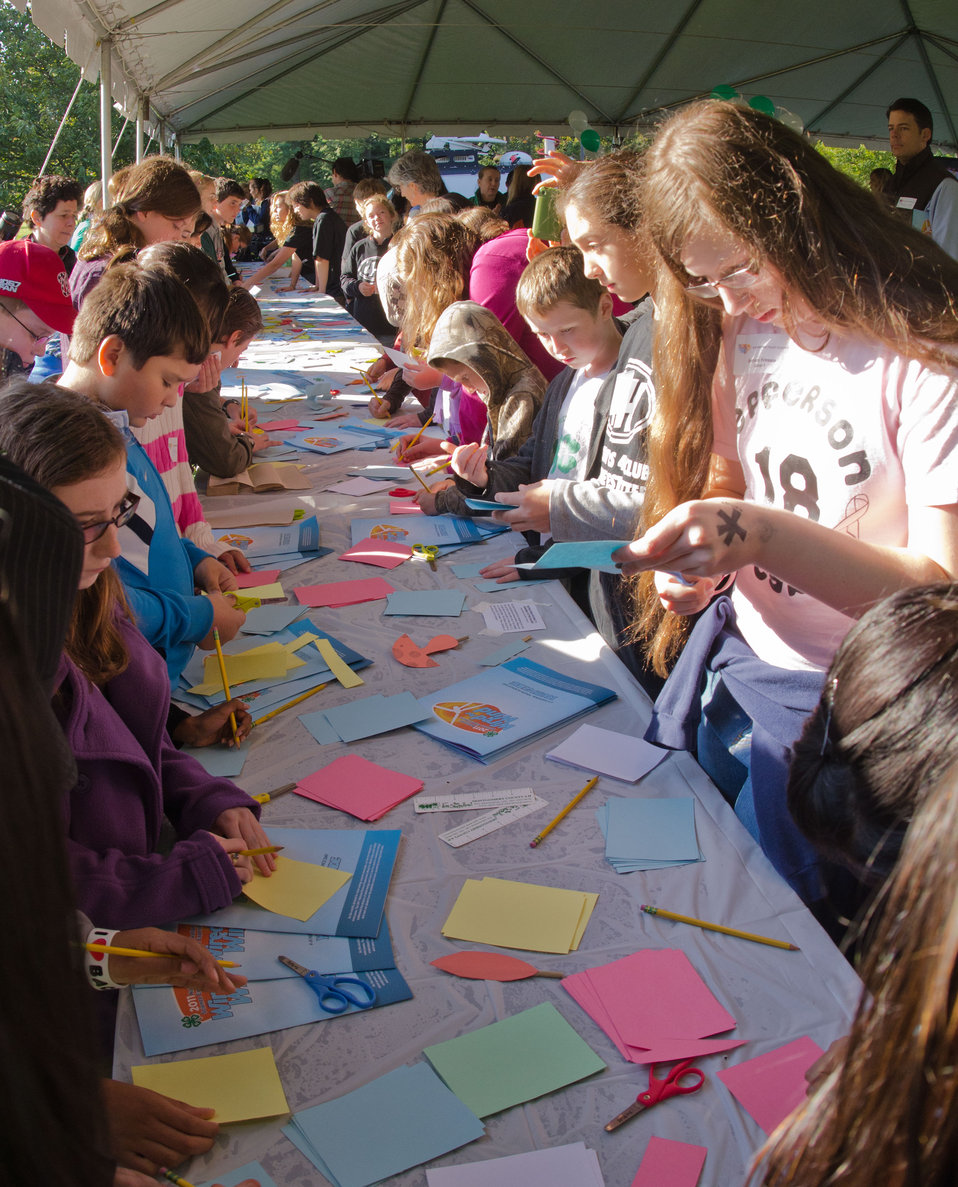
Some of the 150 children from Virginia and Maryland, participated in the 4-H Youth Science Day “Wired for Wind”. The 4H youth design and cut out paper wind generator blades at the National 4-H Conference Center in Chevy Chase, MD, on Wednesday, October 5, 2011. USDA and the 4-H are working to develop the next generation of scientists, engineers and technologists to help our nation recapture its status as a leader in these fields.